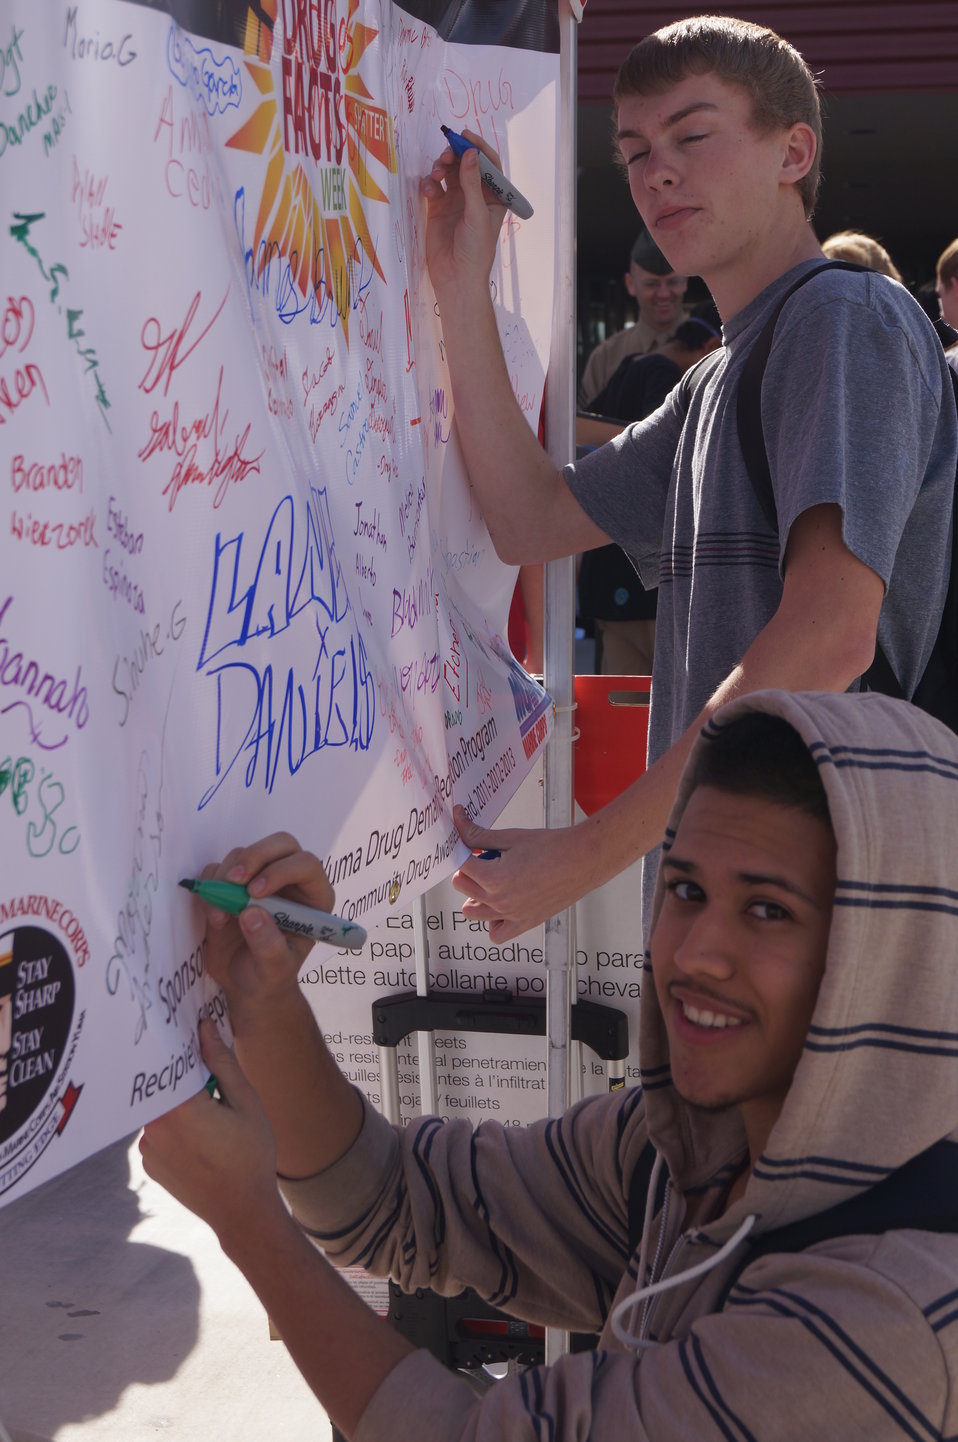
National Drug Facts Week - GILA RIDGE HS

The Drug Demand Reduction Program out of Yuma Arizona held numerous events at local schools to support NIDA's National Drug Facts Week, Jan. 27-Feb. 2 2014. Teens participated in drug awareness games, and helped to Shatter the Myths about teen substance abuse.